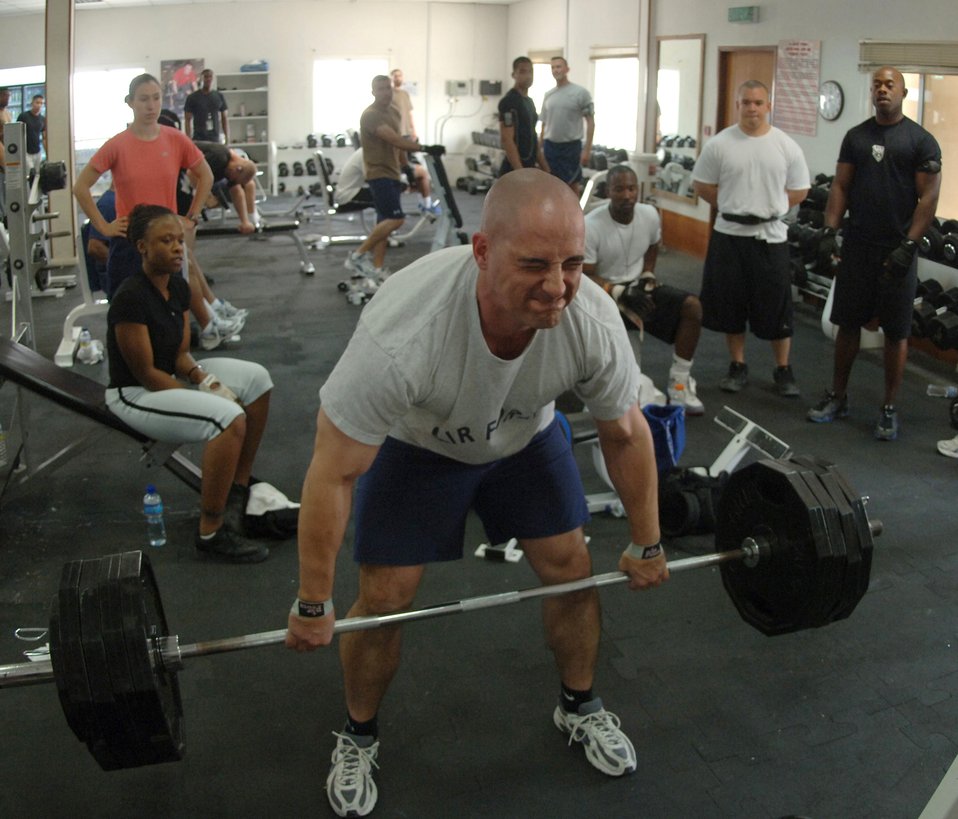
Wing sports day

All eyes are on Master Sgt. Lawrence Morris as he lifts weights in the